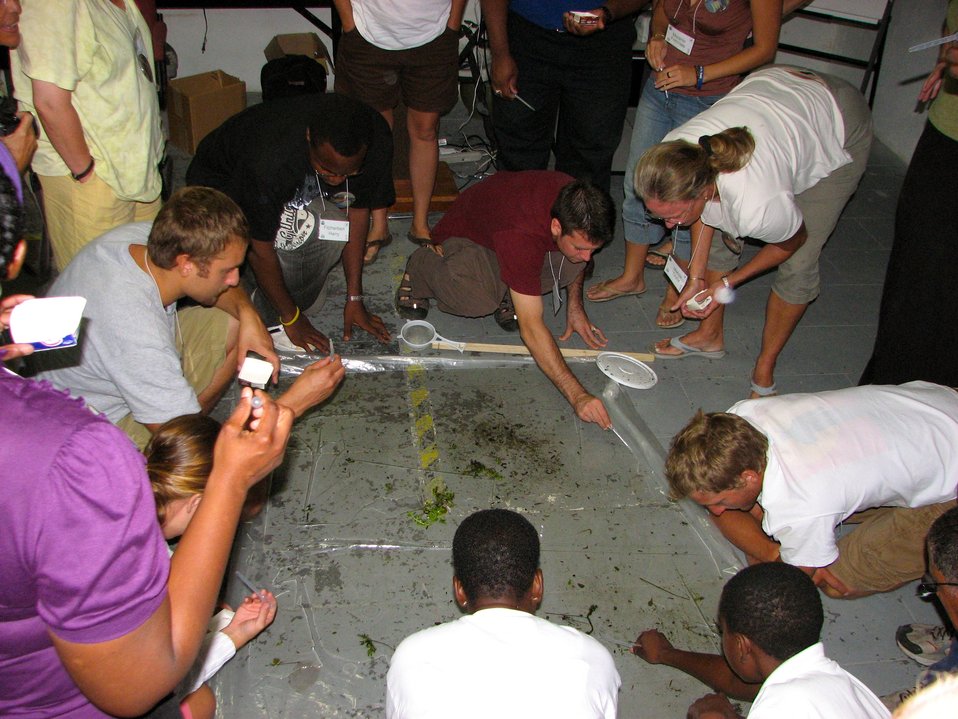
Pour-a-pond - 02

Conservationists in an SCSCB training program learn about pond ecosystems.